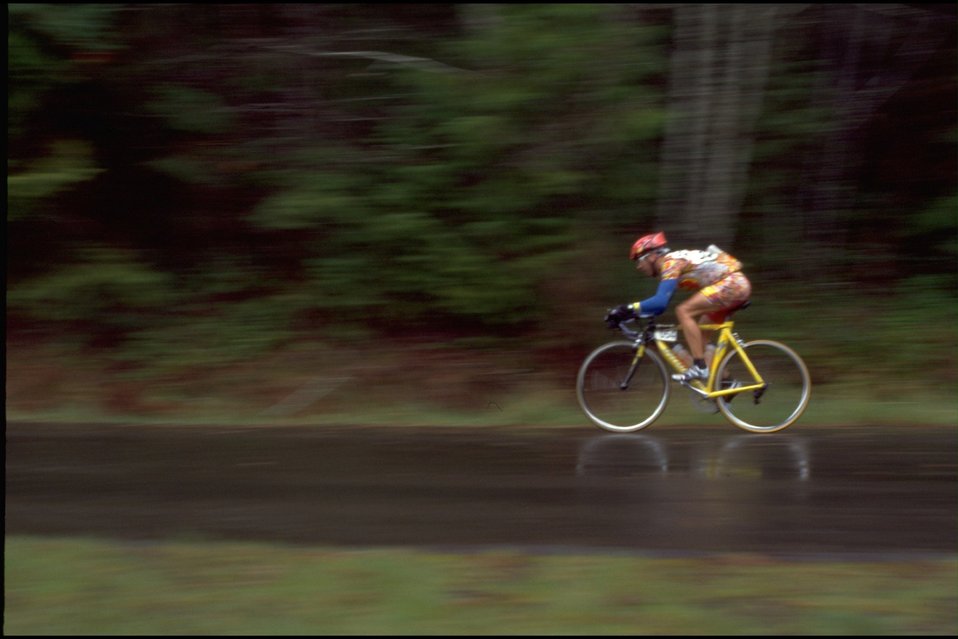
Tour of Willamette.